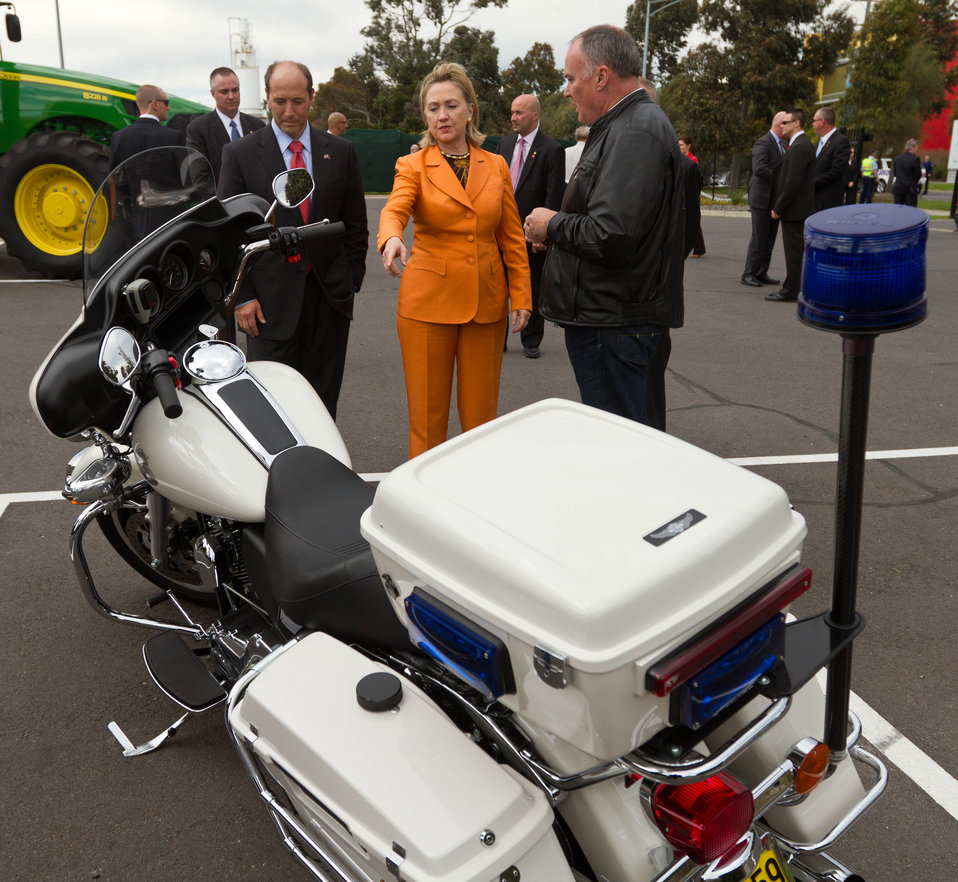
Secretary Clinton Learns About the Harley Davidson Motorcycle

U.S. Secretary of State Hillary Rodham Clinton, center, learns about the Harley Davidson Motorcycle with U.S. Ambassador to Australia Jeff Bleich, left, in Melbourne, Australia, on November 7, 2010.